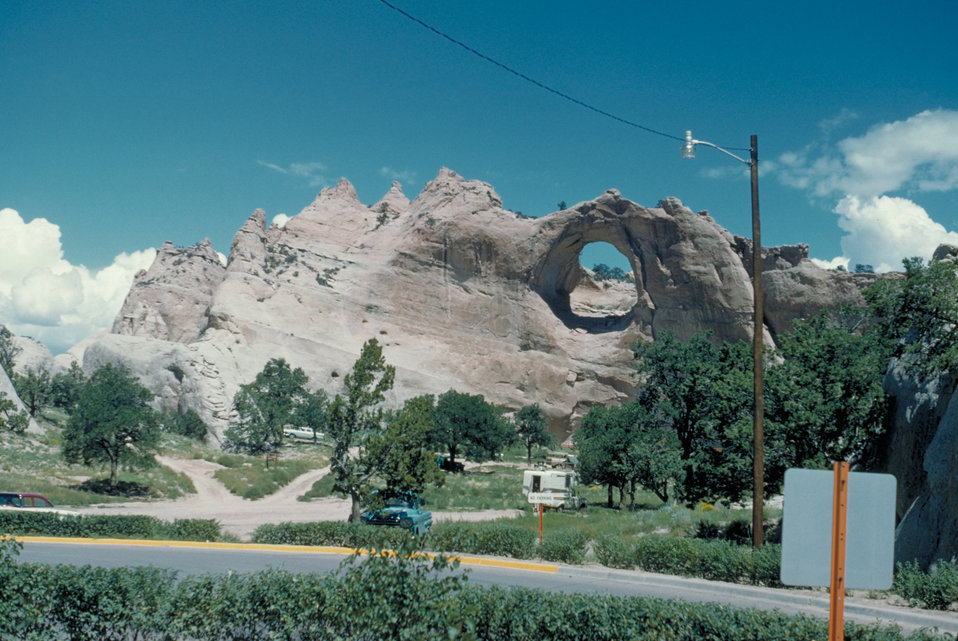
This 1961 photograph was taken during a field study in Window Rock, Arizona.